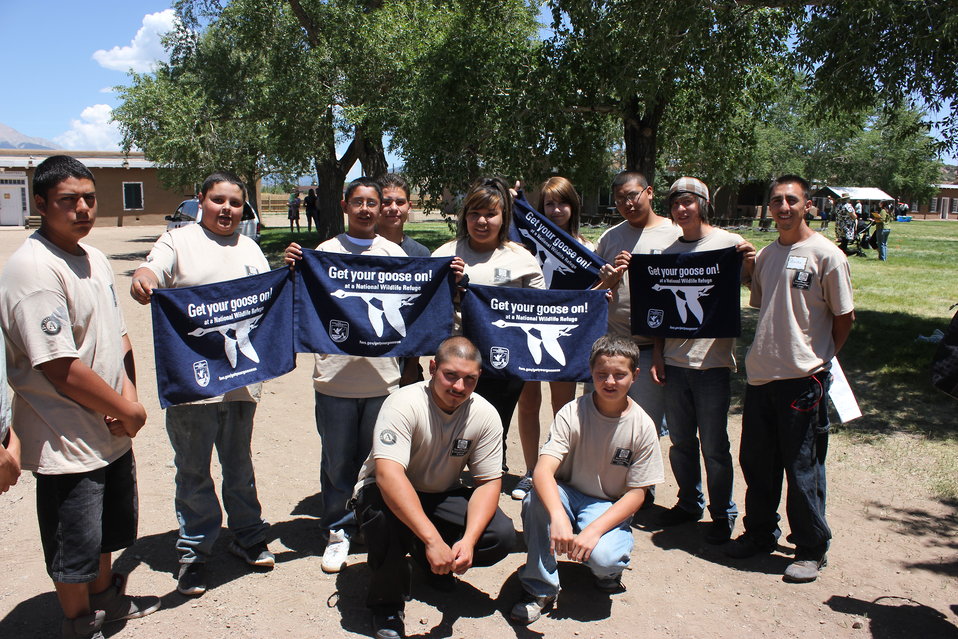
Southwest Conservation Corp

These youngsters helped prepare the grounds for the announcement of one of the largest conservation easement donations in the history of the country. Afterwards, they had the honor of meeting the Secretary of the Interior, Ken Salazar. In this photo they proudly display their Get Your Goose On! towels.